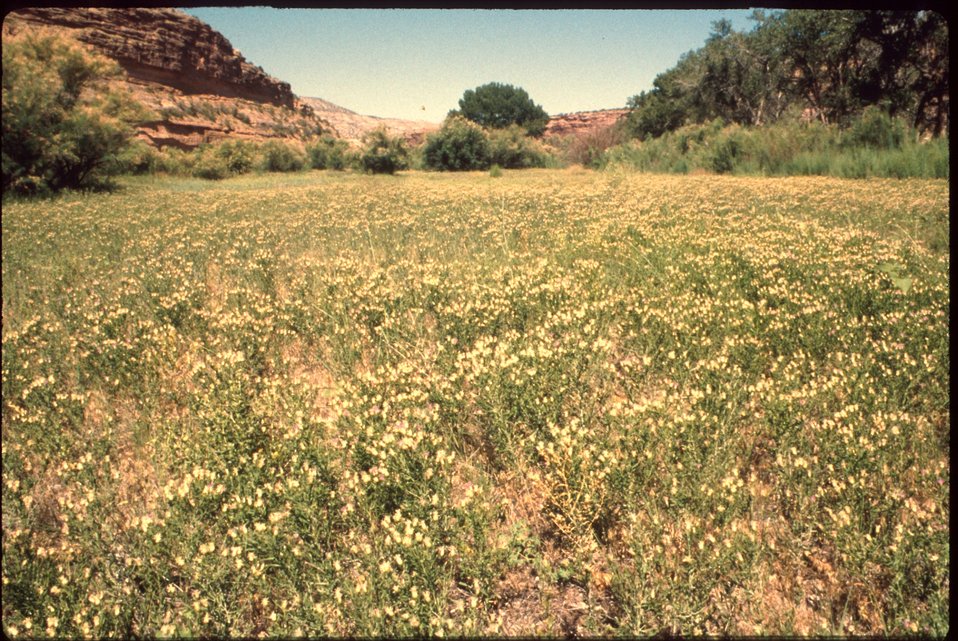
Russian Knapweed Idaho vegetation Plants in BLM